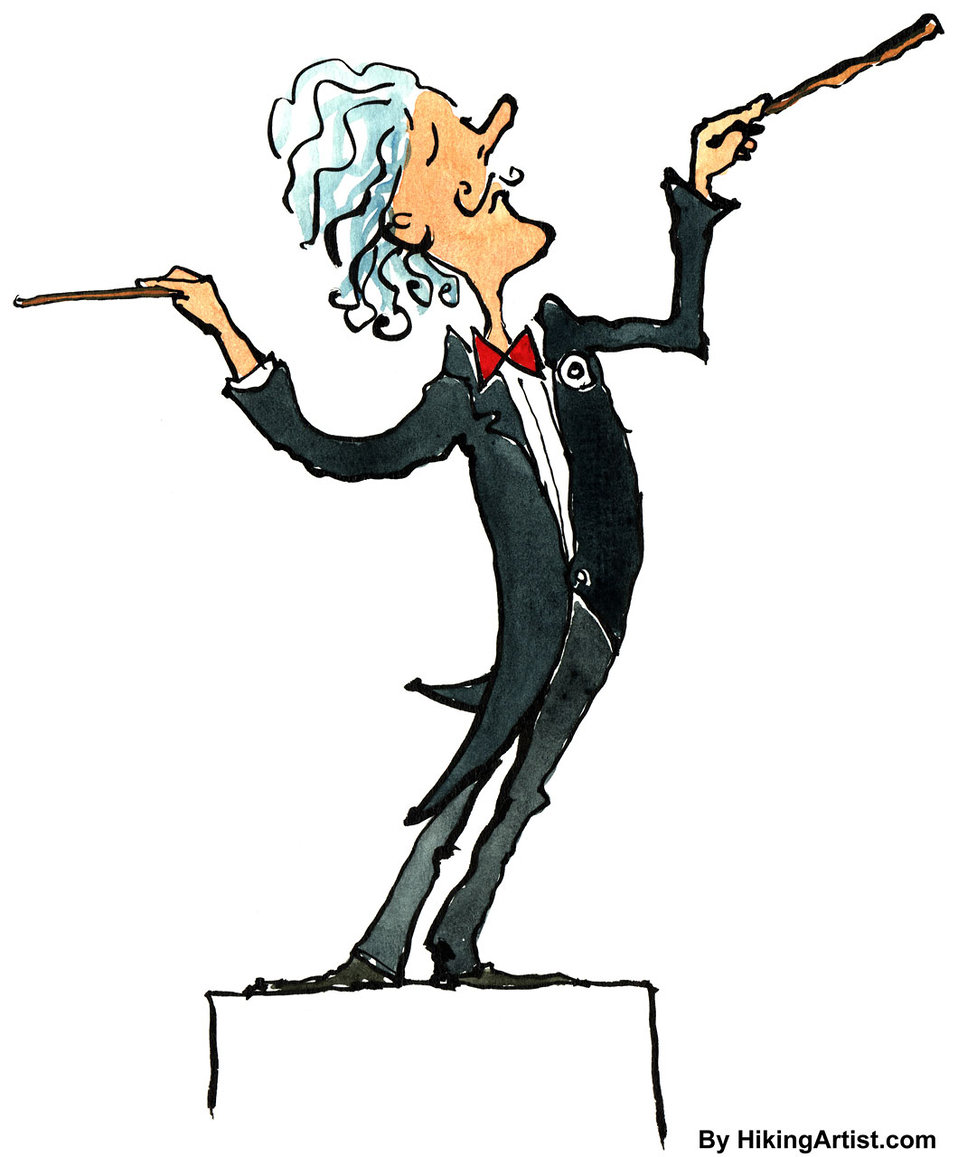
The conductor type

Man leading the music.